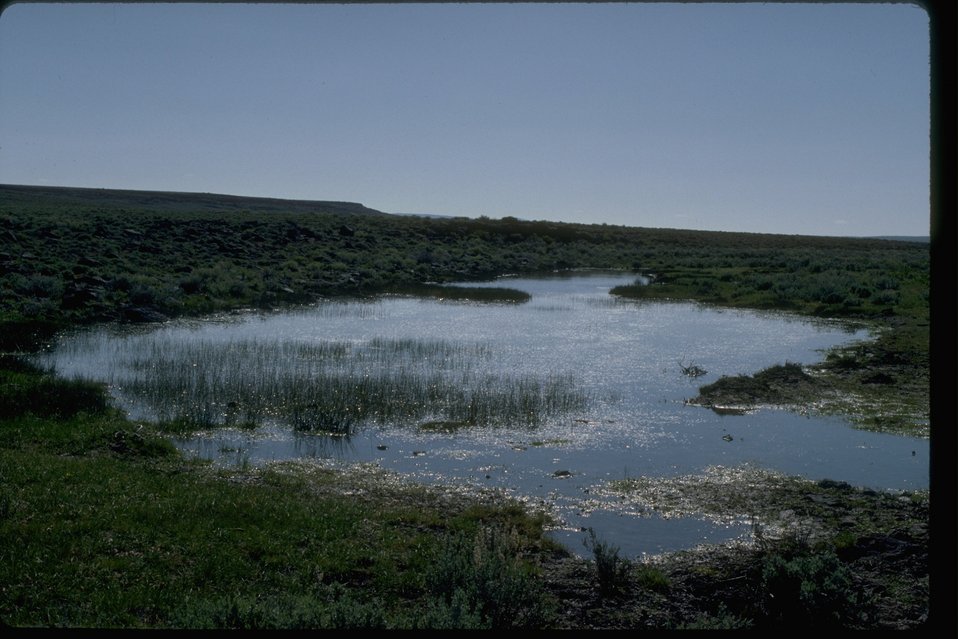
Potholes